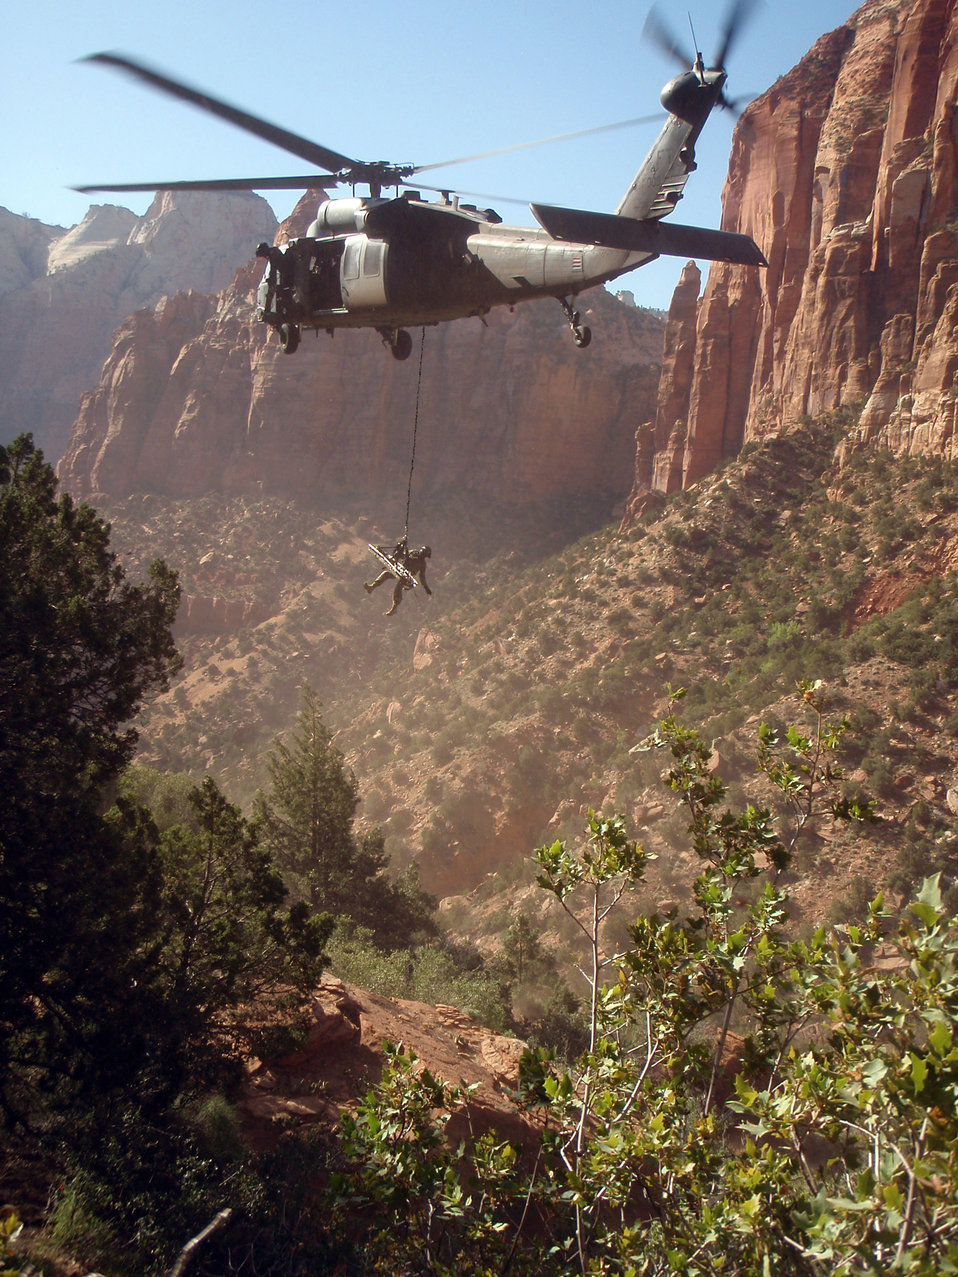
Nellis Airmen rescue fallen climber

Airmen rescue a fallen climber May 9, 2009, at Zion National Park, Utah. The April 18, 2010 rescue at Mosaic Canyon, Calif., consisted of four aircrew members from the 66th Rescue Squadron and three pararescuemen from the 58th Rescue Squadron from Nellis Air Force Base, Nev. Helicopters similar to the one seen here were used in the rescue operation in Mosaic Canyon.